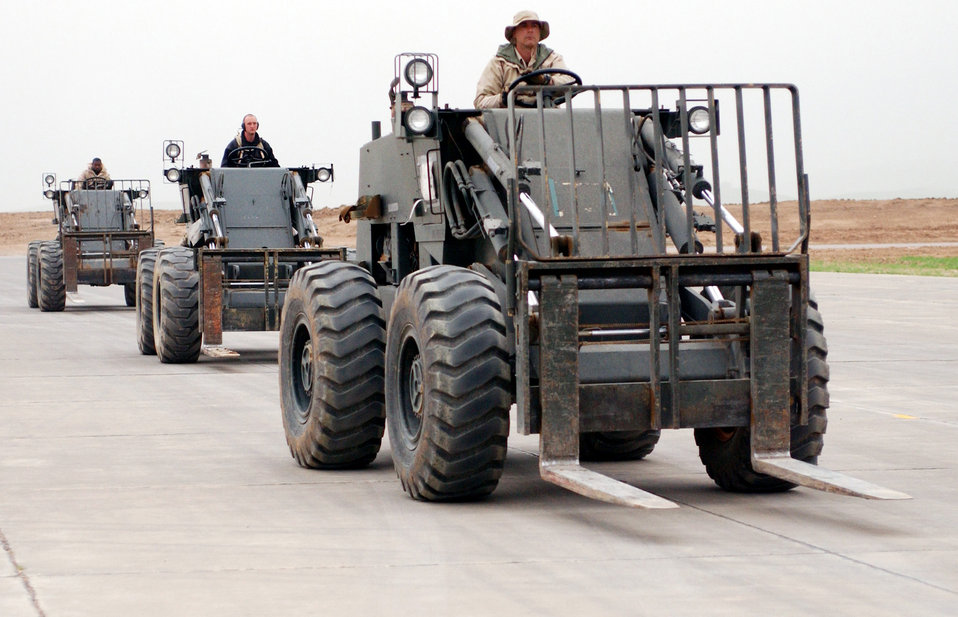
Ready and waiting

OPERATION IRAQI FREEDOM -- Members of the 86th Expeditionary Air Mobility Squadron eagerly await their turn to download a C-17 Globemaster III so the aircraft can be rapidly turned around for return to home base on 6 April. Crews are able to download aircraft here in 30 minutes or less.